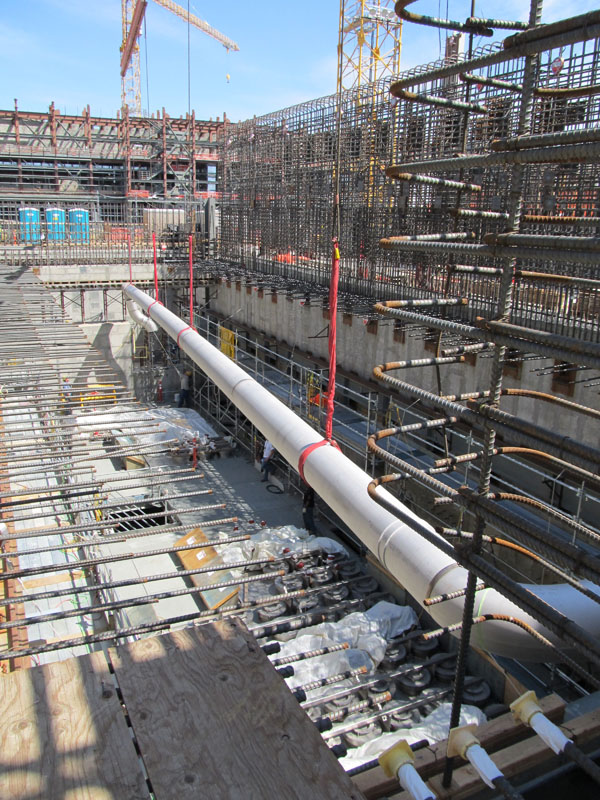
A 140-foot long pipe spool is lowered into the High-Level Waste Facility filter cave

HLW - A 140-foot long pipe spool is lowered into the High-Level Waste Facility filter cave